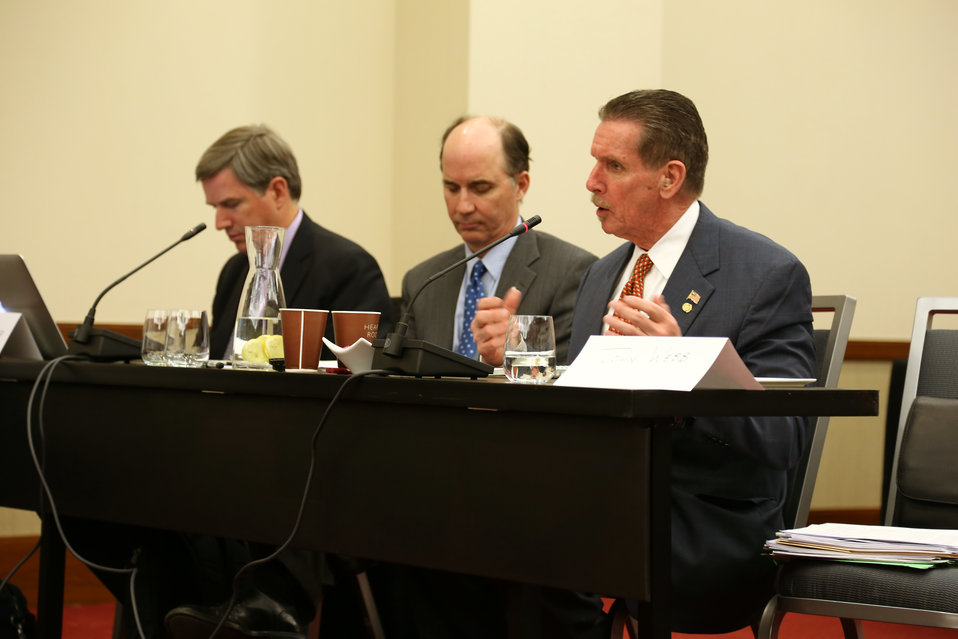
Wildlife Trafficking Advisory Council Meeting March 20, 2014